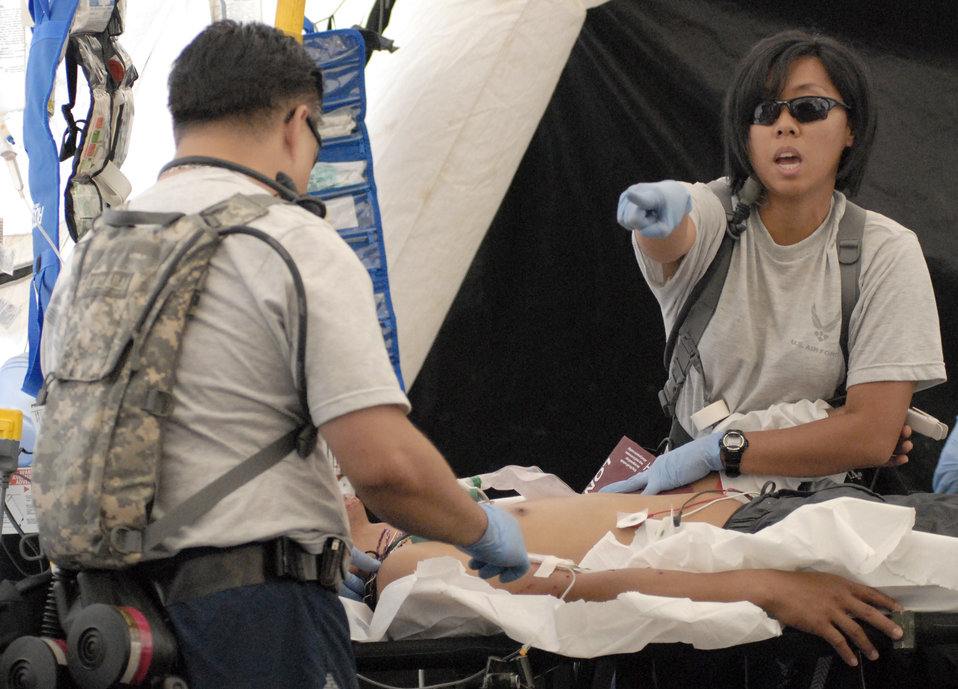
Hawaii National Guard all-hazards response team earns validation

Airmen from the Hawaii Air National Guard's 154th Medical Group assist